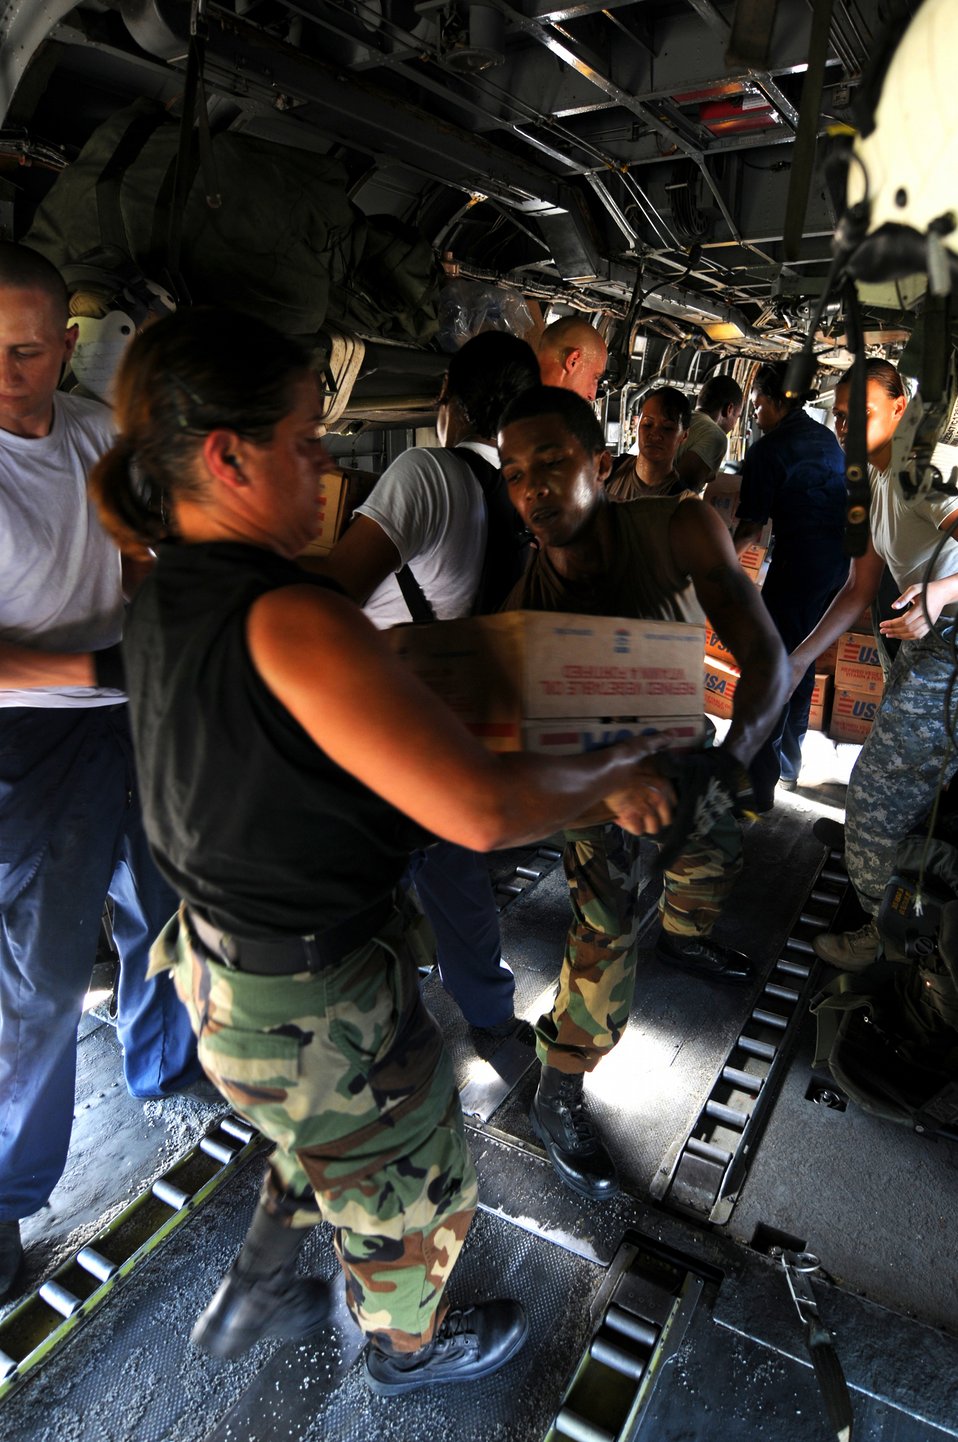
Continuing Promise

Airmen and Sailors from the amphibious assault ship USS Kearsarge load bags of rice into a CH-53 Sea Stallion helicopter to be delivered to Hurricane stricken communities in Haiti as part of a humanitarian aid/disaster relief mission. American Contributions to the relief effort were coordinated by the United States Agencies for International Development and it's office of U.S. Foreign Disasters Assistance. U.S. Navy photo Mass Communication Specialist 3rd Class Christopher Lange